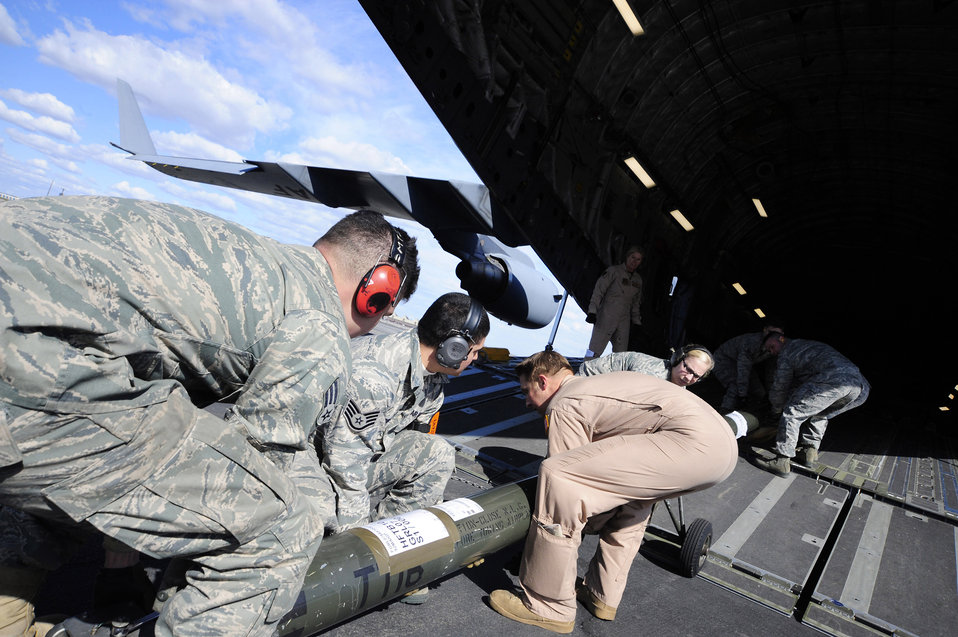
C-17 on a mission

Airmen load generators and other flight equipment onto a C-17 Globemaster III March 22, 2011, at the Grant County International Airport in Moses Lake, Wash., in preparation for a mission in support of Operation Odyssey Dawn.